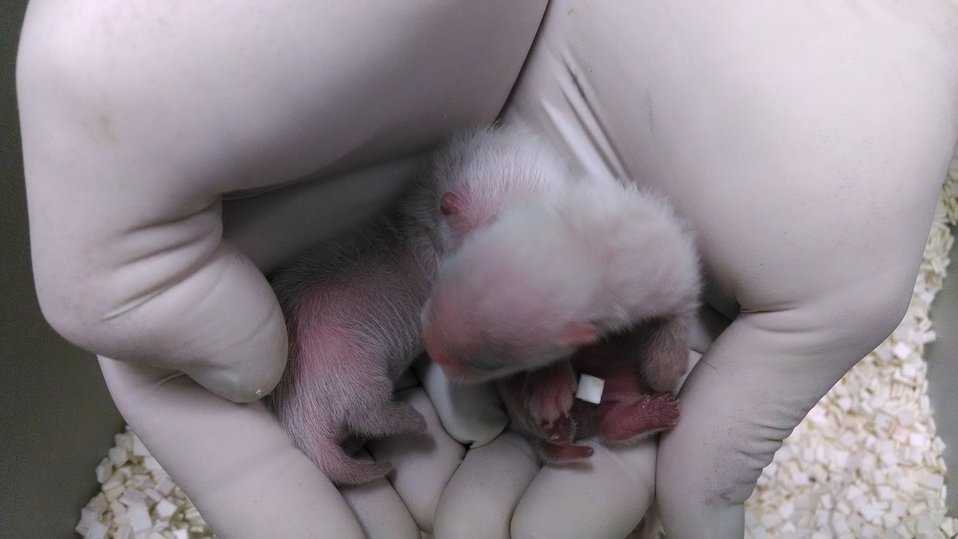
Newborn Black-footed Ferrets

These kits were just one-week-old at the time of this photo (Mid-May, 2014).